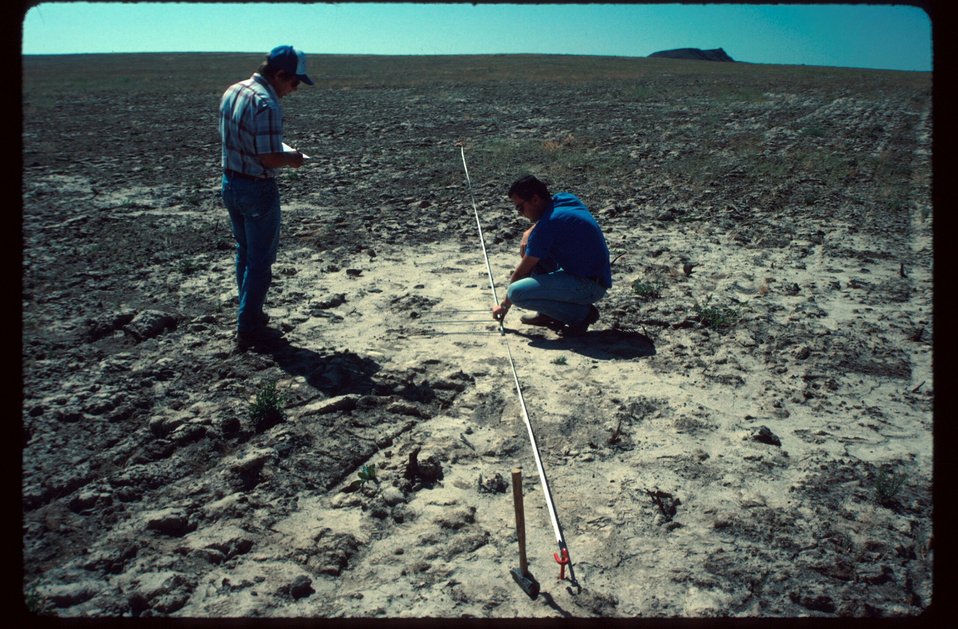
Birds of Prey Initial Point Range Restoration Project